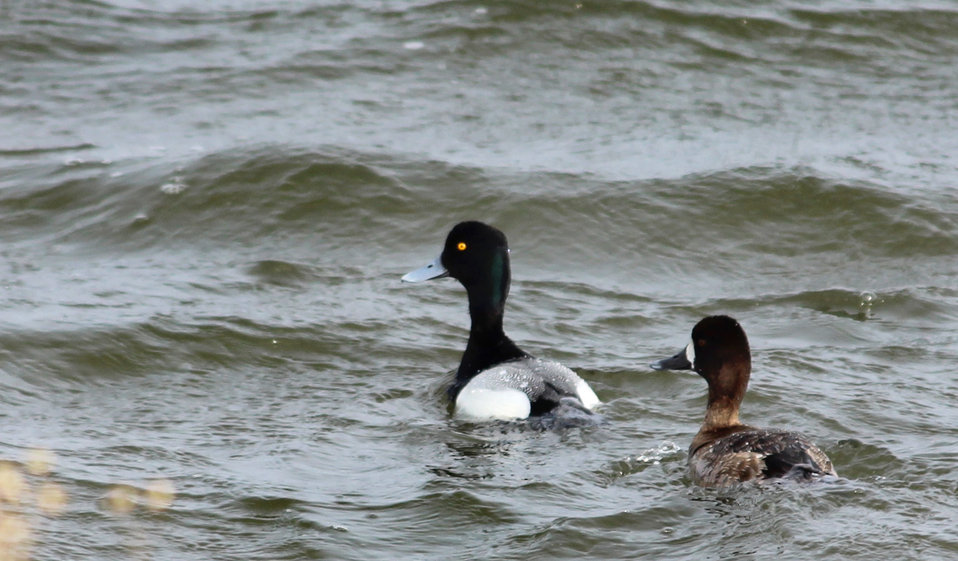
Lesser Scaup

This duck is one of the most common 'diving' ducks found in North America. The male has a dark head and a bright blue bill which is why they are commonly referred to as 'Bluebills'. The female is following in this photo.